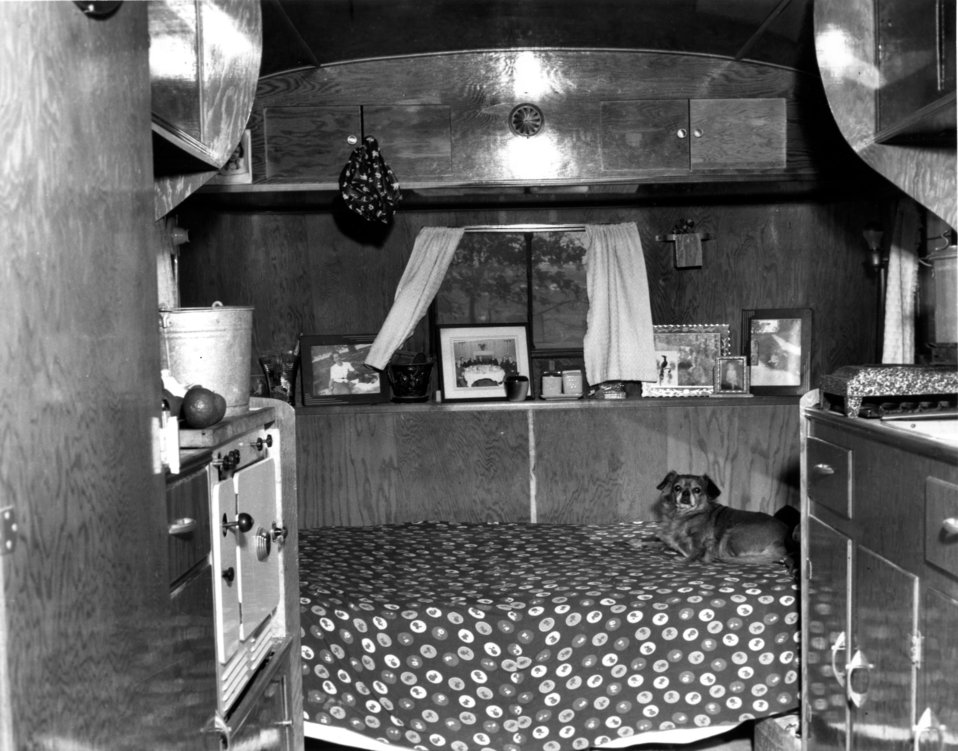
Housing at Oak Ridge